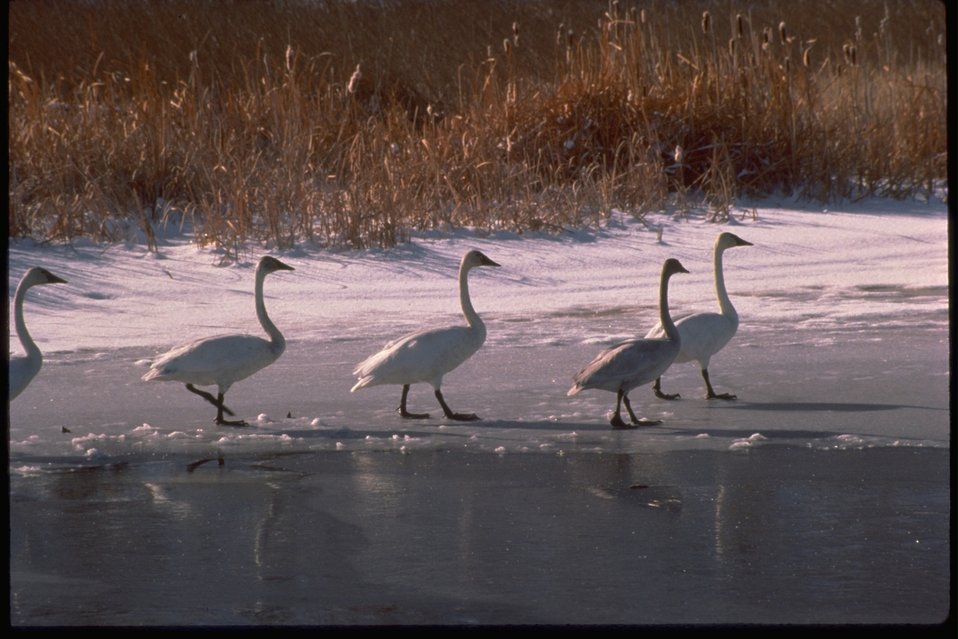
Tundra Swans standing along icy bank.